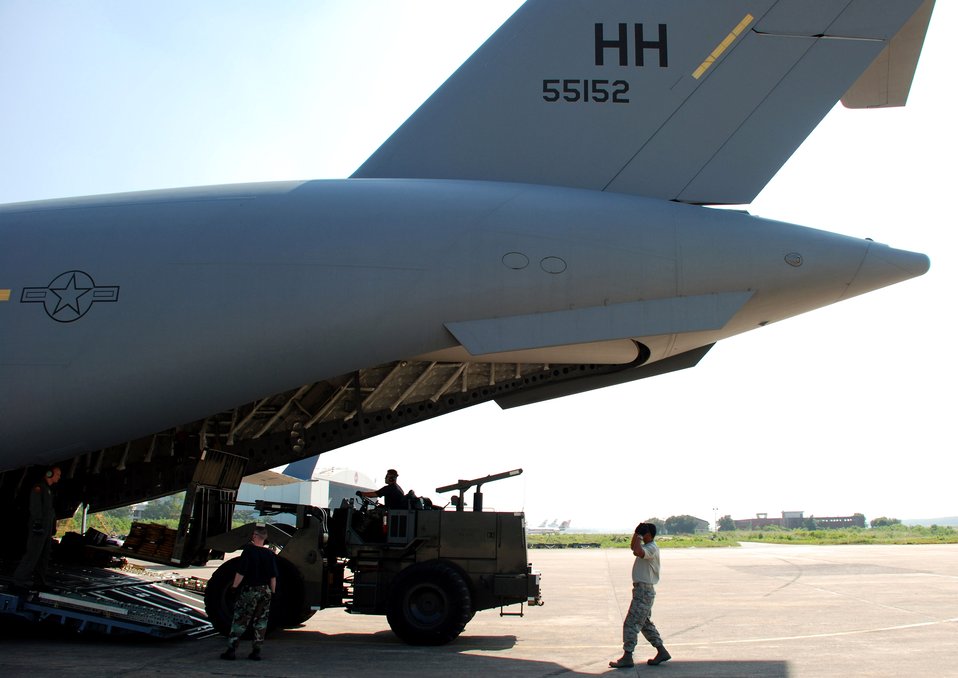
Air Force aid arrives in Bangladesh

Airmen offload cargo from a C-17 Globemaster III Nov. 26 at Zia International Airport in Dhaka, Bangladesh. A 37-person team from the 36th Contingency Response Group from Andersen Air Force Base, Guam, will establish relief supply transload operations in the wake of a Nov. 15 tropical cyclone that devastated much of the southern part of the country. The C-17 and crew are from the 535th Airlift Squadron at Hickam AFB, Hawaii.